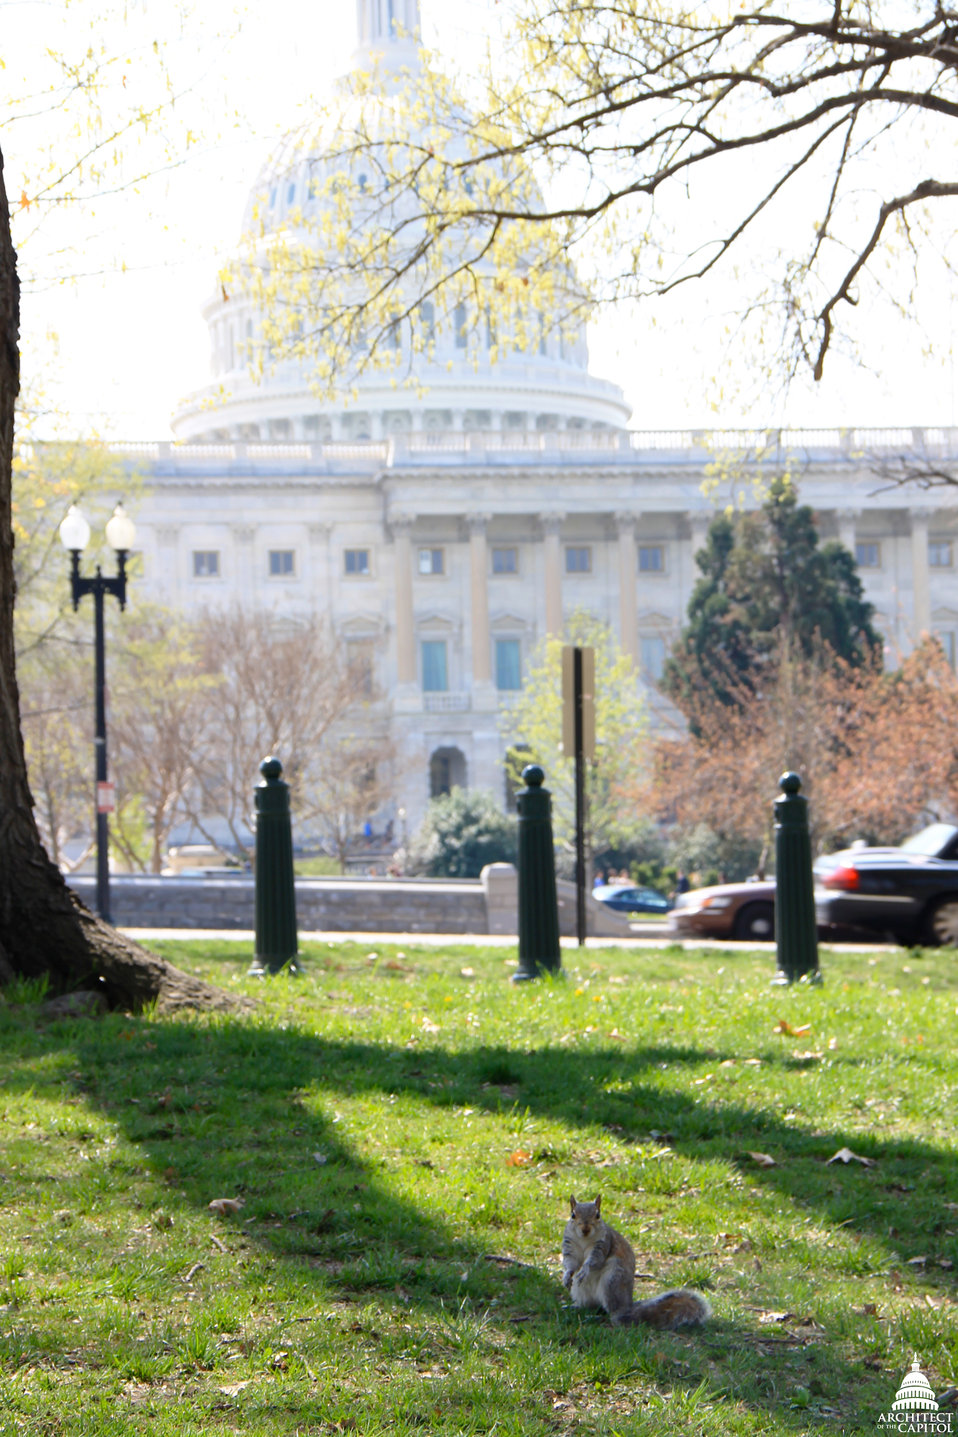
A squirrel on the Capitol Grounds